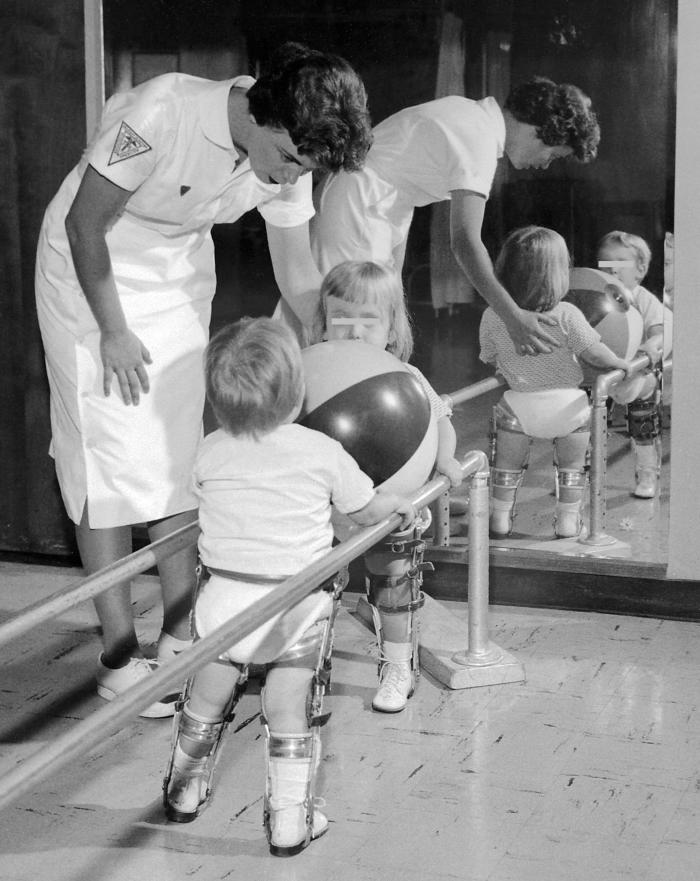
This physical therapist is assisting two polio-stricken children holding on to a rail while they exercise their lower limbs.